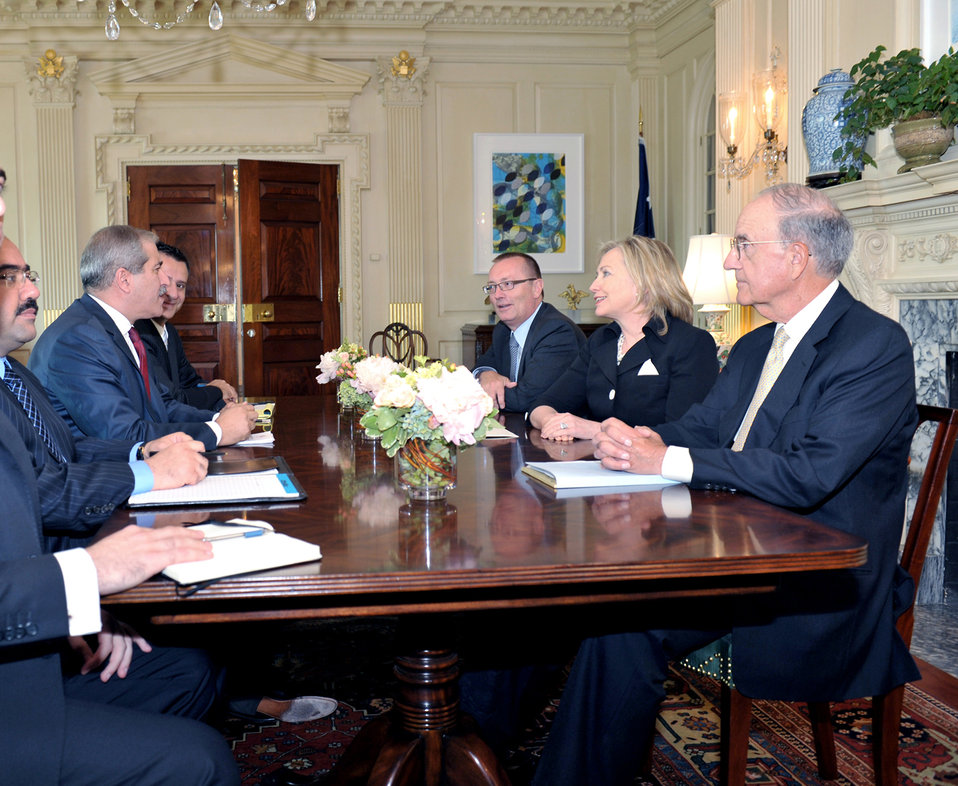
Secretary Clinton Holds a Bilateral Meeting With Jordanian Foreign Minister Judeh

U.S. Secretary of State Hillary Rodham Clinton holds a bilateral meeting with Jordanian Foreign Minister Nasser Judeh at the U.S. Department of State in Washington, D.C., on August 31, 2010.